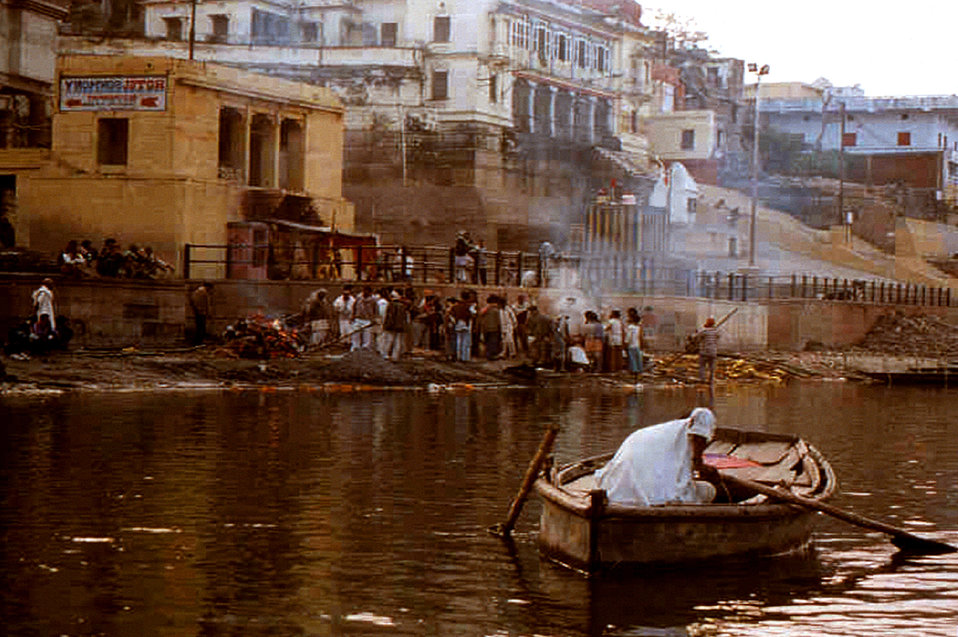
This 2000 photograph depicted a number of individuals gathered at a cremation ceremony on the banks of the Ganges River, in Varanasi, India. Those Hindus who can afford a proper cremation, are ceremoniously returned to the Ganges in these riverside gatherings. Bodies are brought here from all over the country to be cremated. The city is an auspicious place to die, since it is believed to ensure release from the cycle of rebirths, and acts as an instant passport to heaven.